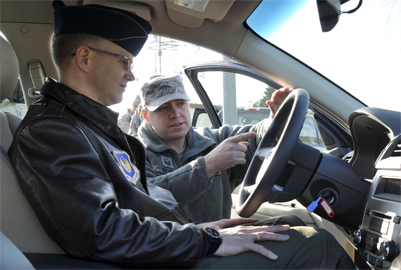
Spangdahlem AB's first hybrid

Master Sgt. Kevin Mead instructs Col. Christopher Weggemen on the proper use of his new hybrid vehicle Jan. 21, 2011, at Spangdahlem Air Base, Germany. Colonel Weggemen is the first person to drive a hybrid in the fleet at Spangdahlem AB, as a step toward the goal to comply with an executive order requiring a 34 percent reduction in greenhouse gas emissions by 2020 and 20 percent reduction of petroleum use by 2015. Sergeant Mead is a European Transportation Training Center instructor and Colonel Weggemen is the 52nd Fighter Wing commander.